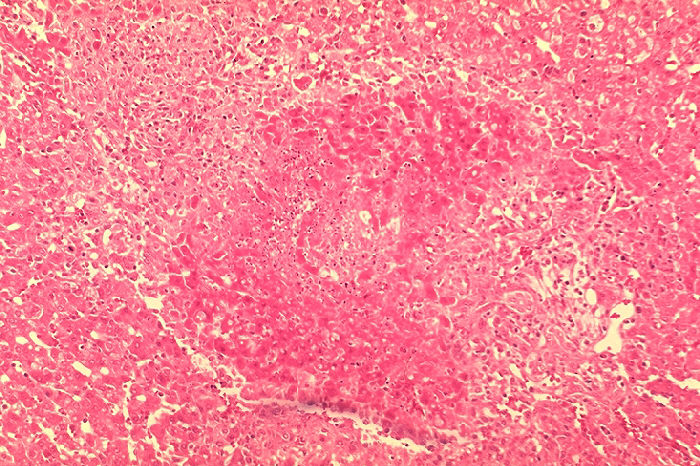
Histopathology of guinea pig liver in experimental Brucella suis infection.